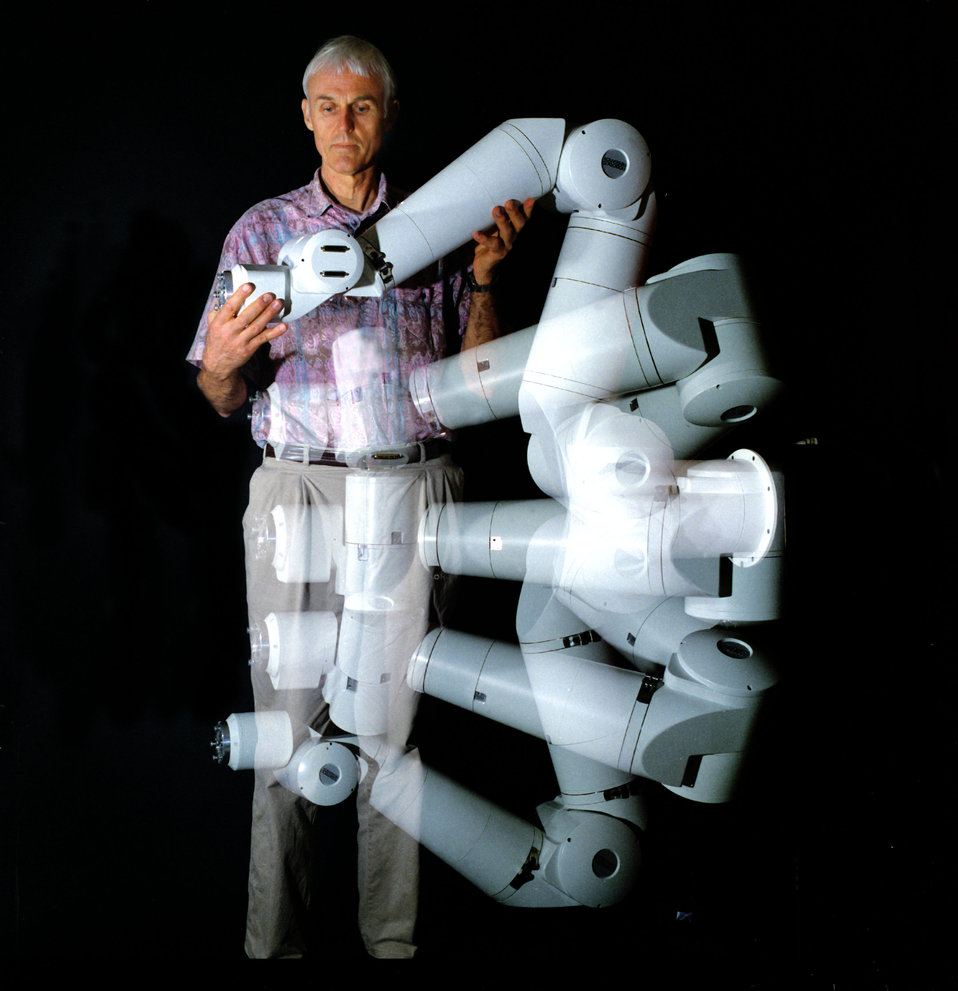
Robotic arm at Oak Ridge National Lab

95-457-2 DOE photo by Lynn Freeny

Robotic arm at Oak Ridge National Lab. Oak Ridge Tennessee 10-26-1995